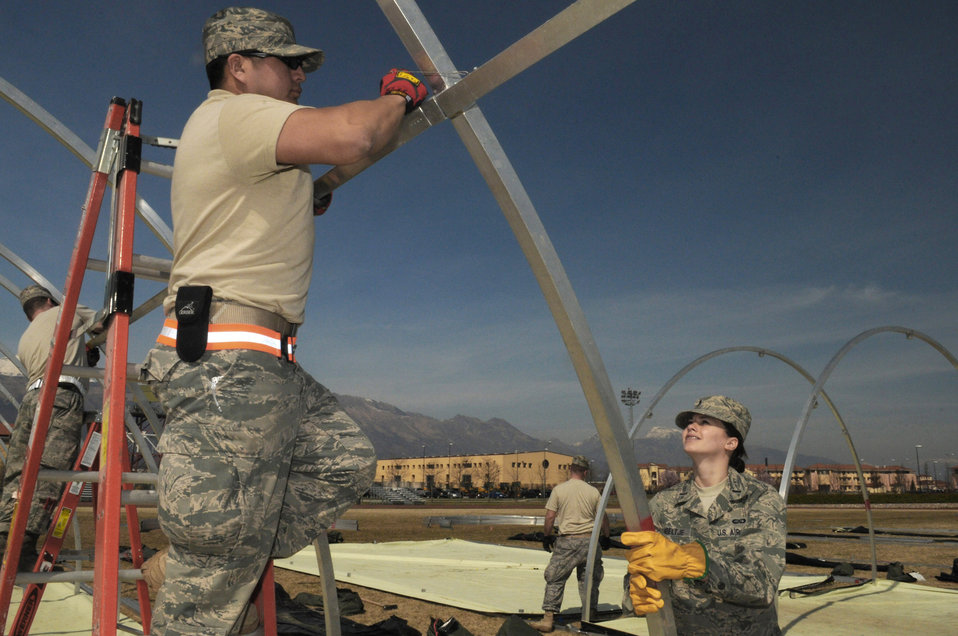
Setting up a tent city

Tech. Sgt. Selvin Hudson and 1st Lt. Elizabeth Hoeltje assemble tents March 22, 2011, at Aviano Air Base, Italy, to house contingency personnel arriving there in support of Operation Odyssey Dawn. Sergeant Hudson is a structural craftsman assigned to the 48th Civil Engineer Squadron at Royal Air Force Lakenheath, England. Lieutenant Hoeltje is an executive officer with the 31st Mission Support Group.